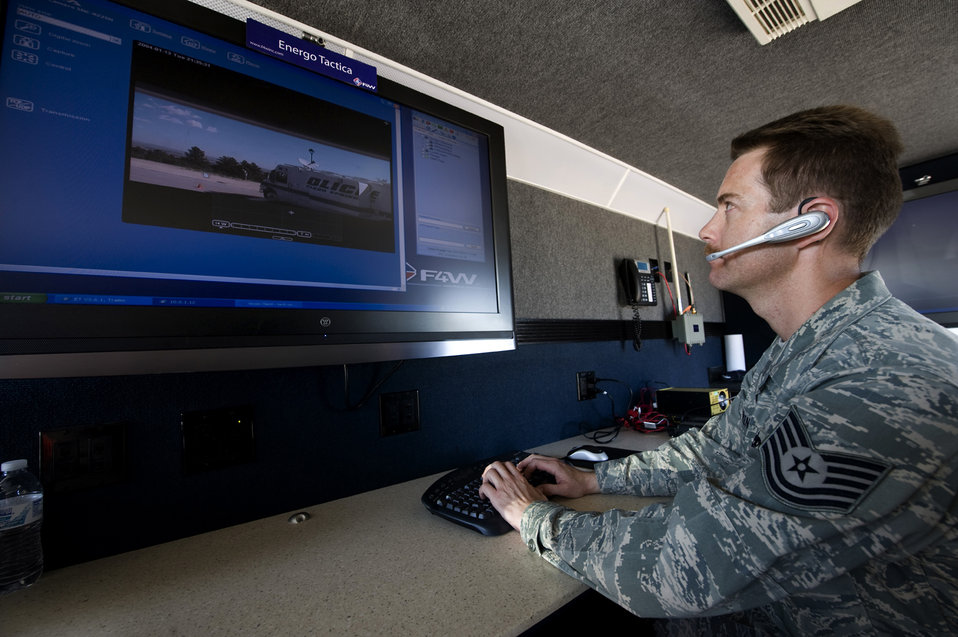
Coalition Warrior Interoperability Demonstration

Tech. Sgt. Donald Green monitors communications during the Coalition Warrior Interoperability Demonstration June 16, 2010, in Colorado Springs, Colo. Green is a member of the Colorado National Guard and is the NCO in charge of communications operations for the Joint Forces Colorado in Centennial, Colo.